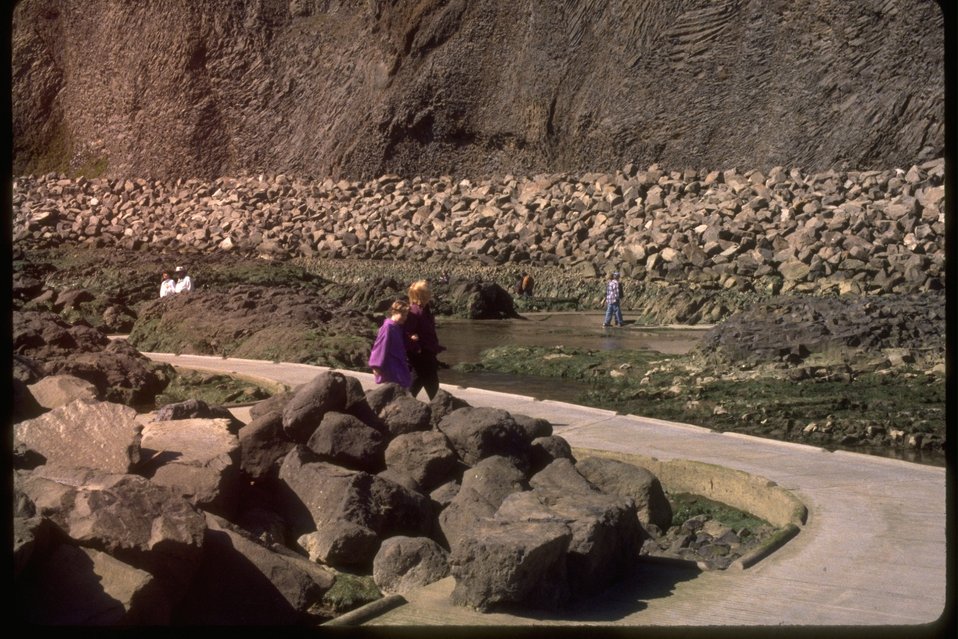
Sidewalk access to Quarry Cove tidepools.